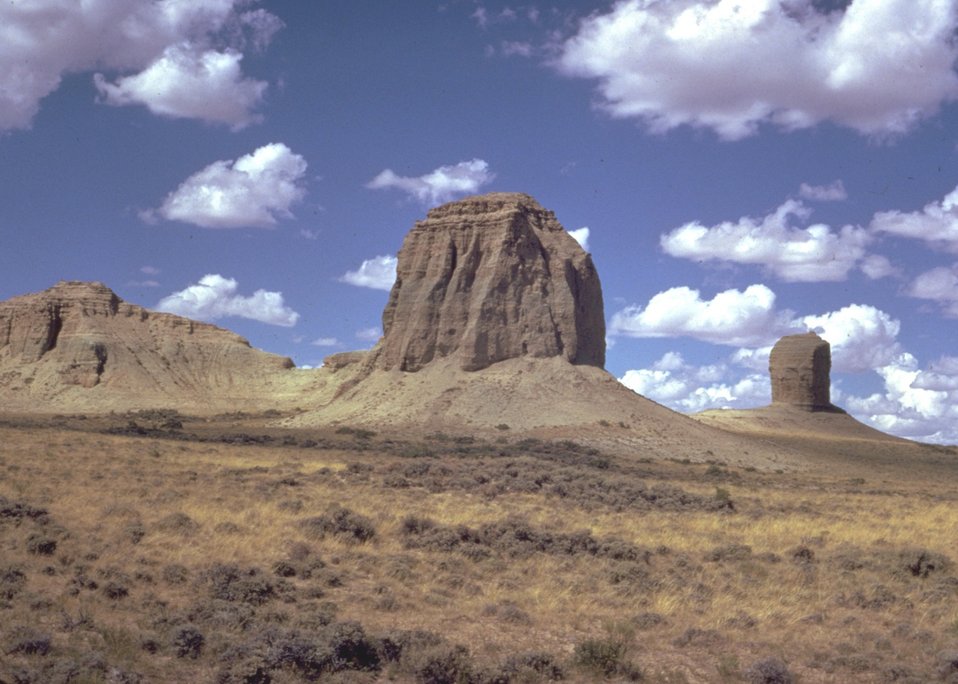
View of rocky area.